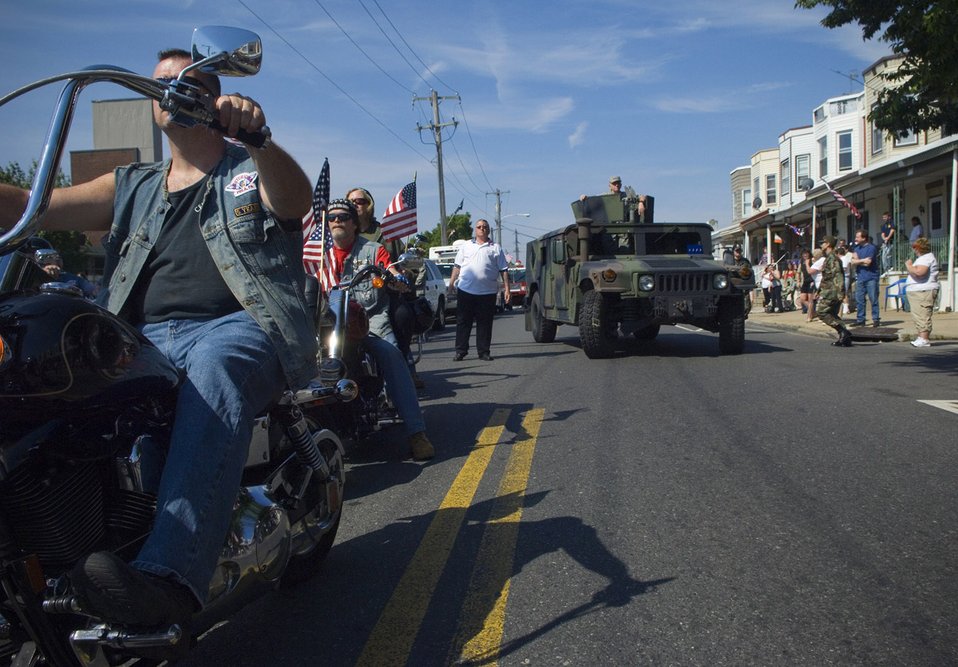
Philly Air Force Week

Patrons of the Bridesburg Memorial Day Parade prepare for events May 26. Bridesburg is a borough in Philadelphia and hosted kickoff celebrations for Air Force Week Philadelphia. The parade featured a fly-by of a KC-135 Stratotanker and a KC-10 Extender and a performance by the U.S. Air Force Heritage of America Band. Air Force Week Philadelphia is an event designed to build new relationships in the Philadelphia metropolitan area and strengthen public support for the Air Force mission and Airmen serving worldwide in the war on terrorism.